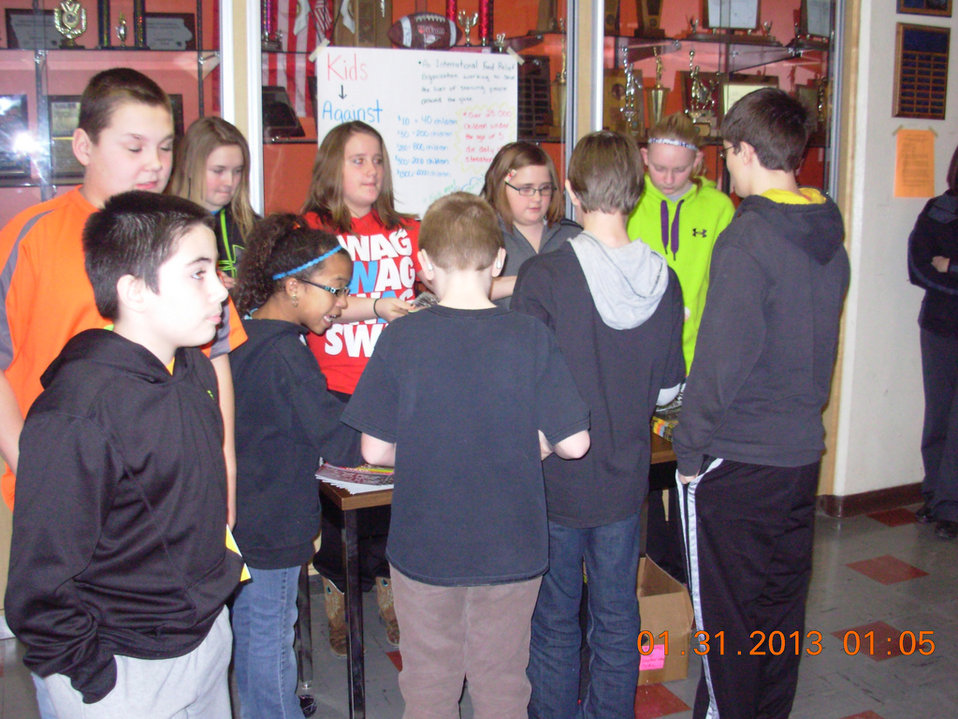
Iowa's SAFE Coalition, NDFW 2013

Van Buren County, IA. SAFE Coalition high school student run groups fighting issues of drug, alcohol, and tobacco abuse during NDFW 2013.